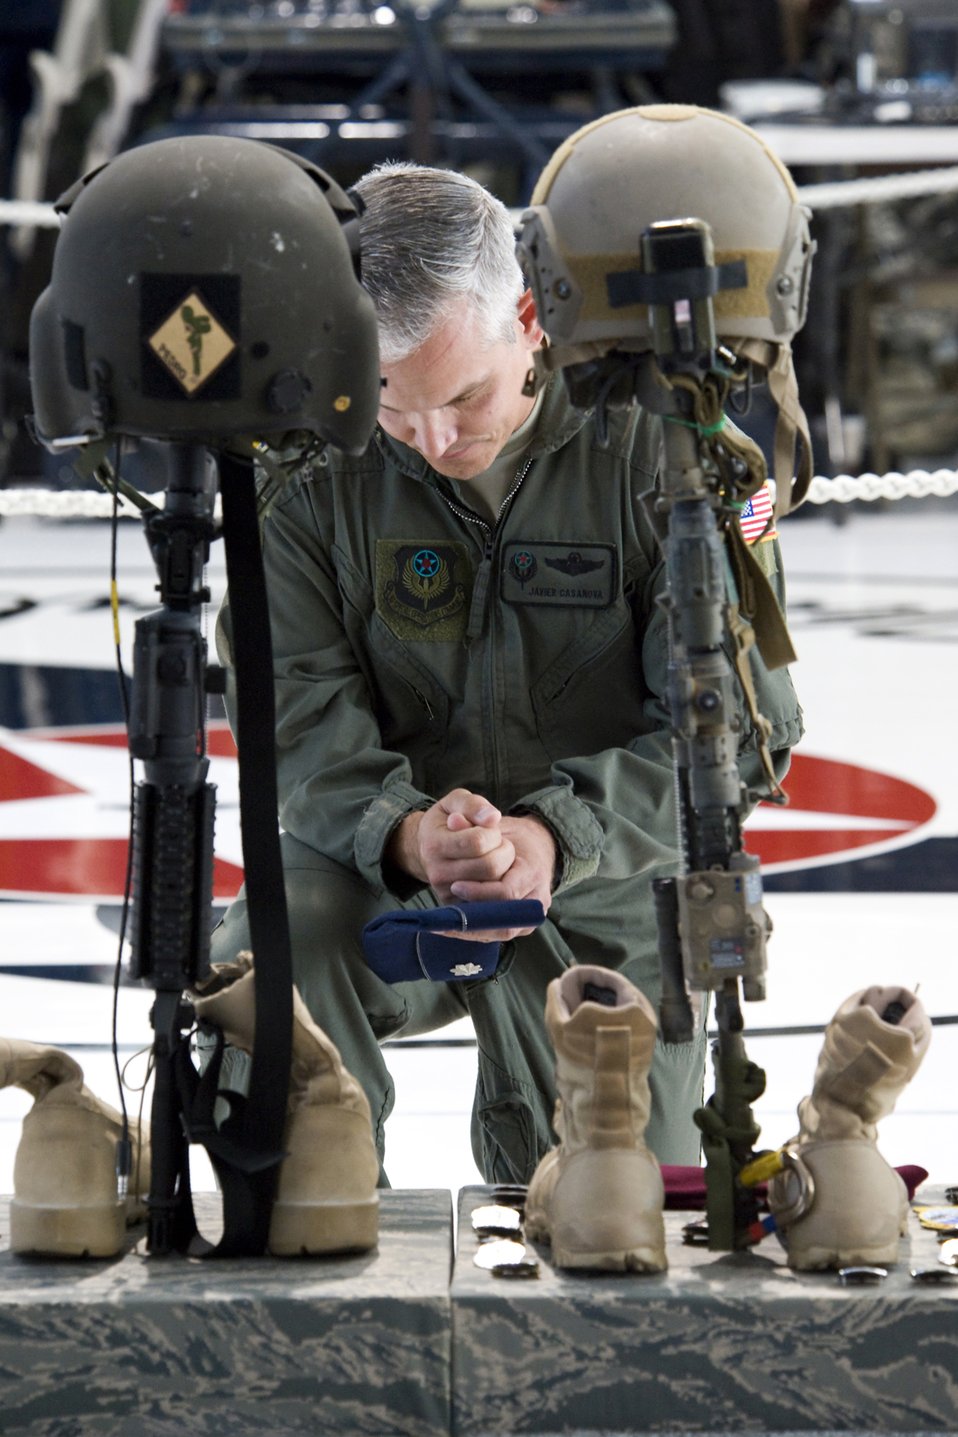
Rest in peace

Lt. Col. Javier Casanova pays his final respects June 18, 2010, to 1st Lt. Joel Gentz, a combat rescue officer with the 58th Rescue Squadron, and Staff Sgt. David Smith, a helicopter flight engineer with the 66th Rescue Squadron, during a memorial ceremony at Nellis Air Force Base, Nev. The two were among four Airmen killed when an HH-60G Pave Hawk helicopter crashed June 9 in Afghanistan.